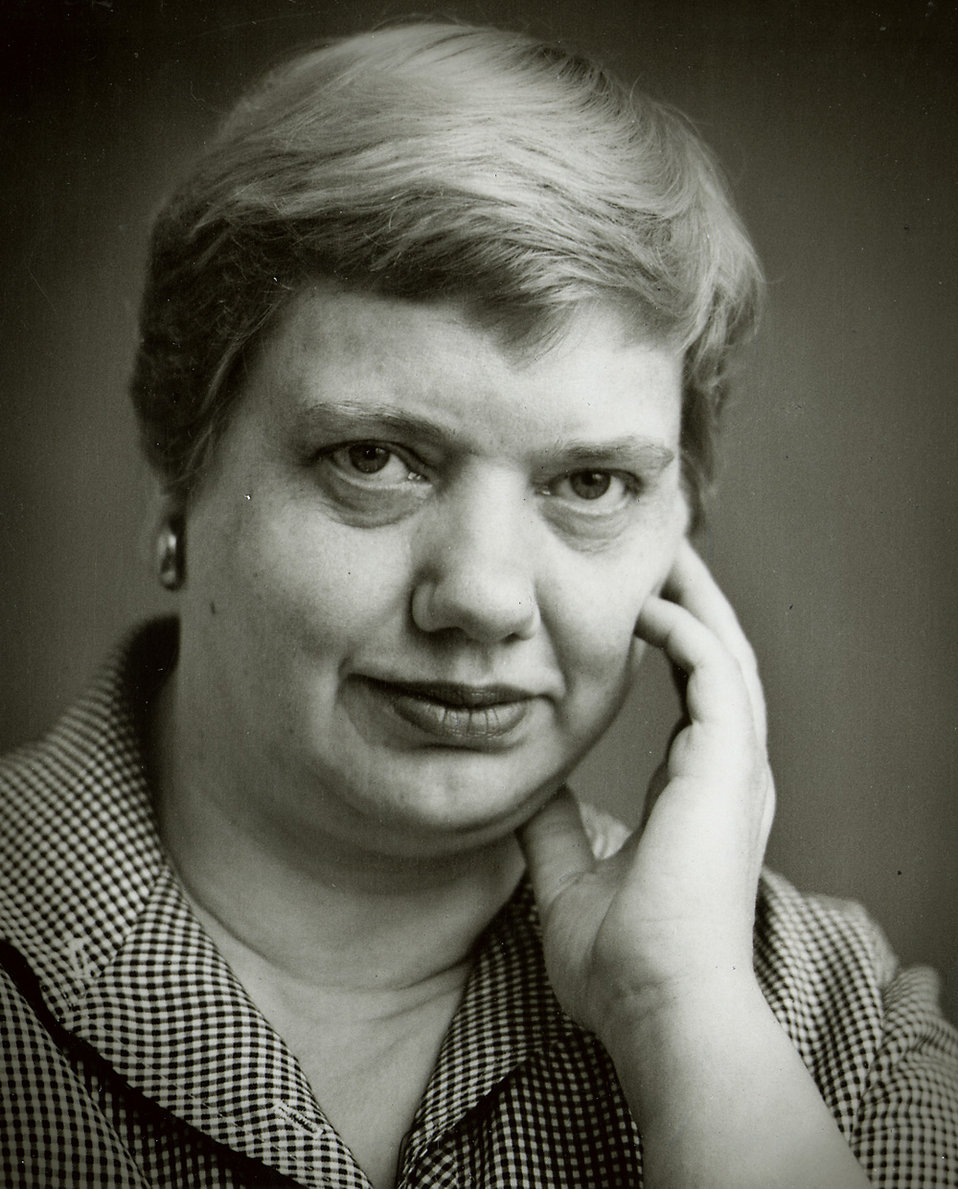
Evelyn Raymond - Women Artists

Sculptor, Bronze statue of Maria L. Sanford of Minnesota for the National Statuary Hall Collection.